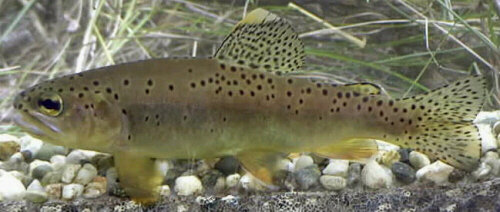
Apache trout (Oncorhynchus apache)

USFWS Headquarters
Status: Threatened